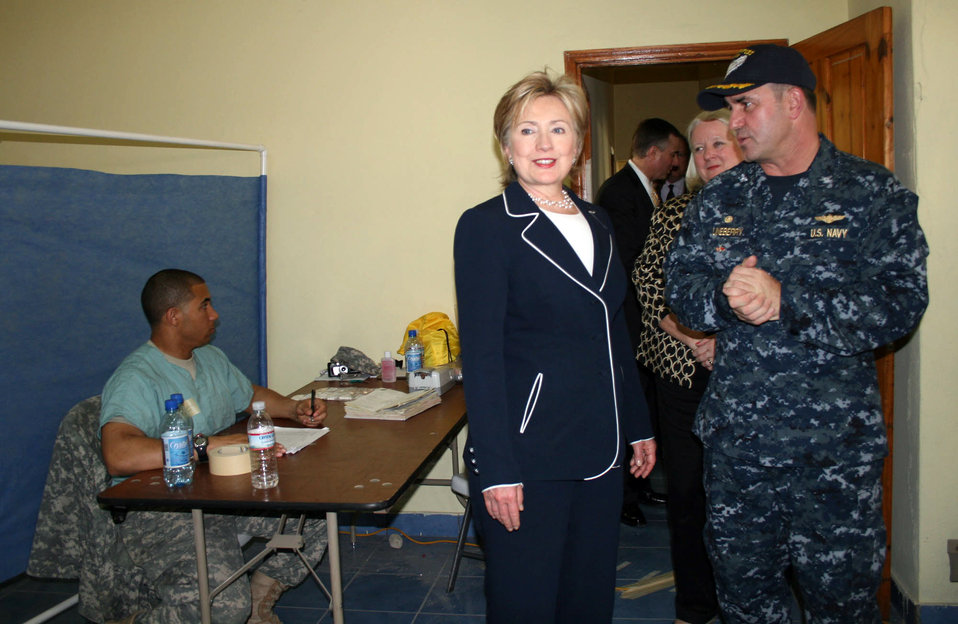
Secretary Clinton Visits Comfort Clinic in Haiti

U.S. Secretary of State Hillary Rodham Clinton and Commodore Robert Lineberry, Mission Commander for Continuing Promise 2009 tour the Dental Area at the Comfort Clinic in Cite Soleil, Haiti April 16, 2009. Behind the two is U.S. Ambassador to Haiti Janet A. Sanderson.